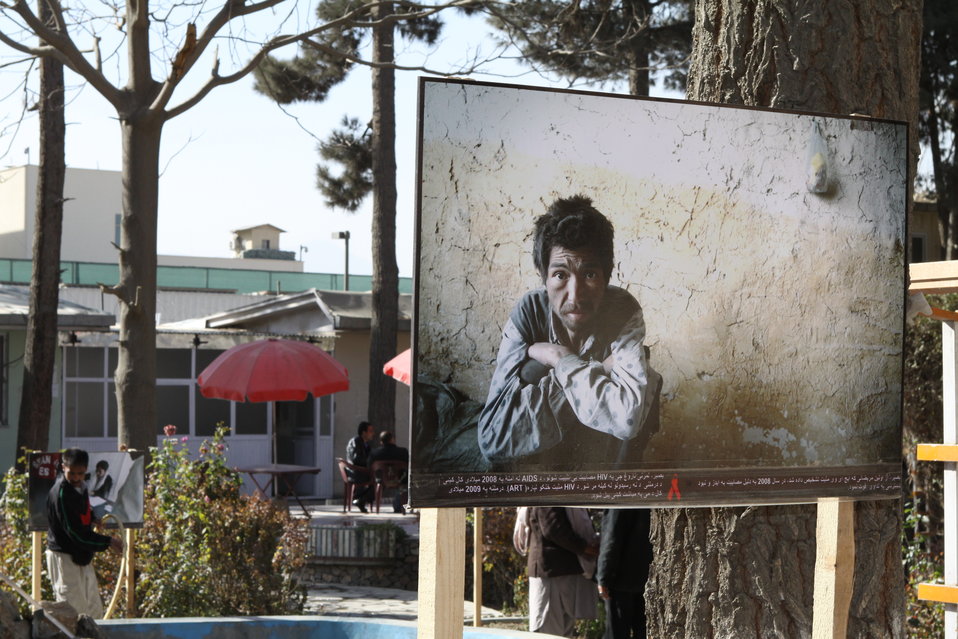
Community Health Workers Celebrated

Kabul, Afghanistan | December 5, 2010 — In support of the United Nations designated International Volunteer Day for Economic and Social Development, Afghanistan’s Ministry of Public Health celebrated its annual Community Health Worker Day today. Acting Minister of Public Health Dr. Suraya Dalil, USAID Senior Deputy Mission Director Robert Hellyer, other government officials, and international donors joined in recognizing the critical contribution of community health workers in Afghanistan and encouraging them to continue their voluntary support to their communities.
The event praised the contributions of the more than 22,000 volunteers throughout the country who deliver community level health-education, counseling, and services out of village health posts located in private homes. The Ministry of Public Health envisioned that community-based healthcare programs will actively encourage communities and families to adopt healthy lifestyles and behaviors, and provide families access to high quality and socially acceptable preventative medicine and life-saving services.
“We have 22,000 community health workers in Afghanistan that are able to implement the basic and standard medicines. They all have been trained through a job description,” said Minister Dalil. Addressing the health workers, she added, “I am proud and feel powerful that I have people like you.”
USAID-funded health projects collaborate closely with the Ministry of Public Health to improve the health and nutritional status of Afghans, provide quality primary healthcare, and promote healthy behaviors at the community and household-levels. USAID supported the training of more than 9,000 of the volunteer community health workers currently working in Afghanistan.
“On behalf of the American people, I congratulate the Community Health Workers for their diligence to gain the skills and knowledge necessary to serve their communities in this important role,” said USAID Senior Deputy Mission Director Hellyer. “USAID strongly supports community based health care and believes that quality community-based health services are essential to reaching Afghanistan’s Millennium Development Goals.”
To support the Basic Package of Health Services, USAID assisted in developing the community health worker training manual, helped train community health worker supervisors and master-trainers, facilitated in-service training, and produced and developed reporting tools, job aids, and education materials.